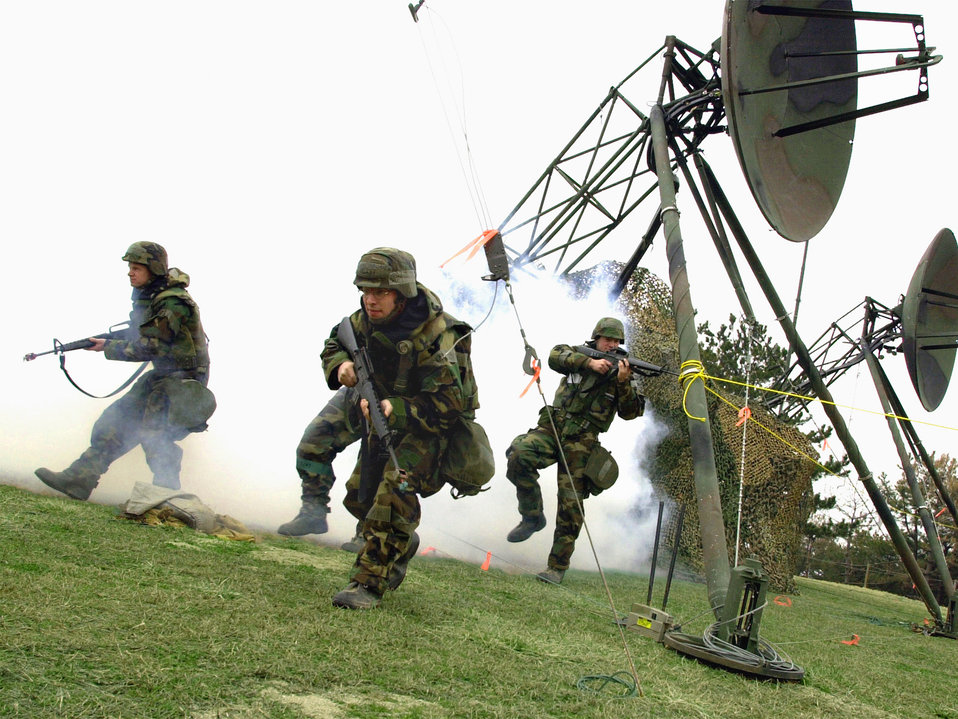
Runnin' and gunnin'

KUNSAN AIR BASE, South Korea -- Tech. Sgt. Kevin L. Koontz, Staff Sgt. Michael D. Valfre, Senior Airman Paul J. Hasbrouck and Airman 1st Class Lawrence C. Busch, 607th Combat Communications Squadron, Camp Humphreys, Republic of Korea, sweep their area for opposing forces on top of